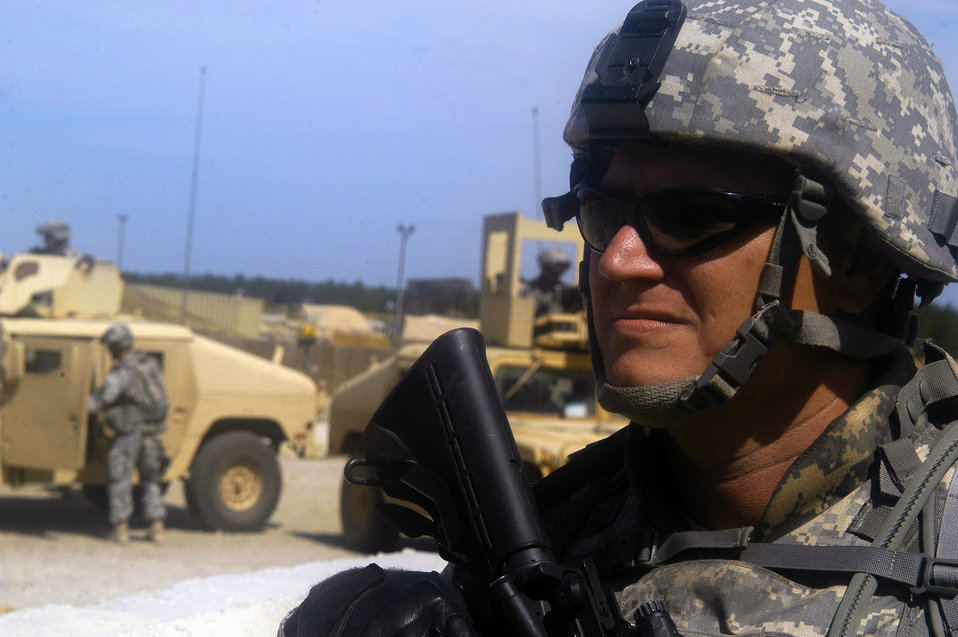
Airmen train at Fort Bragg for 'outside the wire' deployment

Staff Sgt. Josh Newman peers out at the perimeter of Forward Operating Base Patriot Sept. 24 at Fort Bragg, N.C. Sergeant Newman is assigned to the Nangarhar Provincial Reconstruction Team headed to Afghanistan in November. He is one of only five Air Force noncommissioned officers to ever attend an all-officer Army Signal Corps training course at Fort Gordon, Ga. The training at Fort Gordon was in preparation for the nearly three-month long Combat Skills Training at Fort Bragg and the PRTs deployment to Afghanistan. Sergeant Newman is a satellite communications operator from MacDill Air Force Base, Fla.